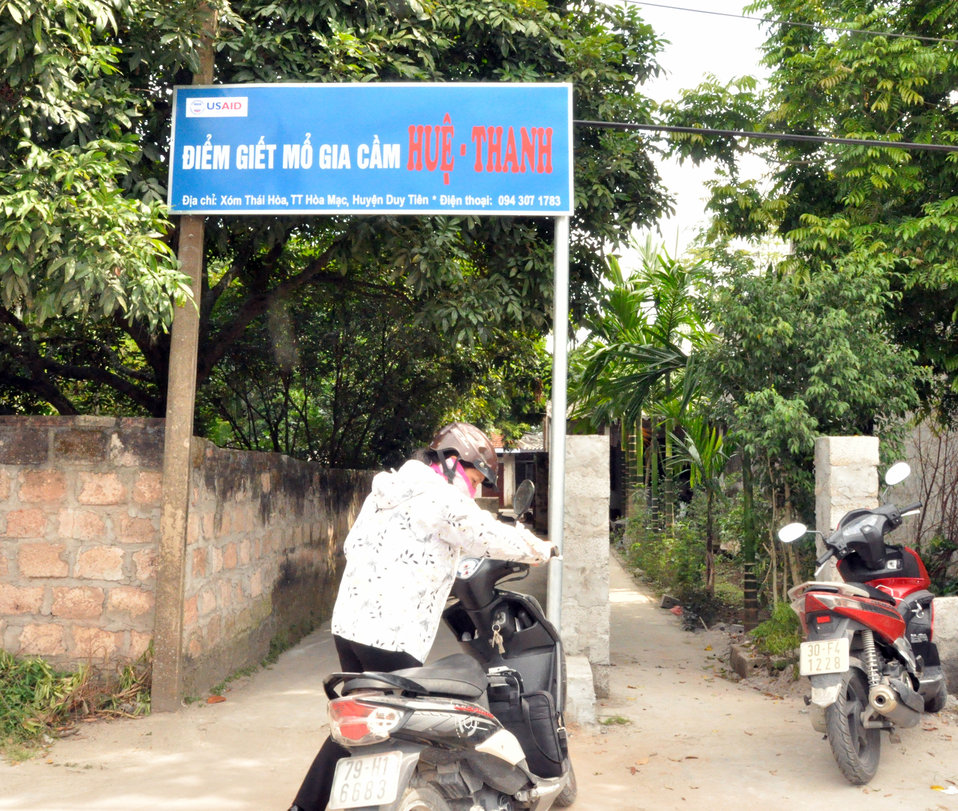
Handover Ceremony Hoa Mac Market Ha Nam

October 26, 2012